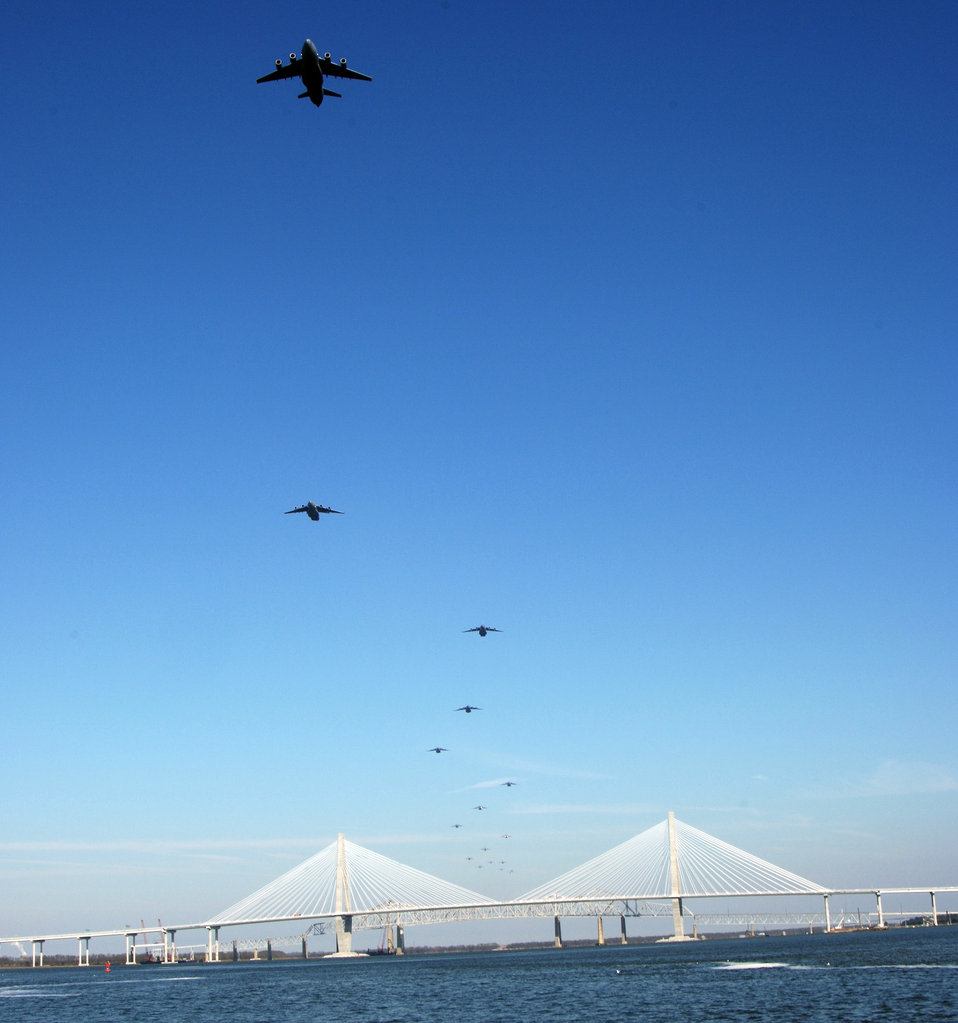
C-17 formation

CHARLESTON, S.C. (AFPN) -- A formation of 17 C-17 Globemaster IIIs assigned to the 437th and 315th Airlift Wings at Charleston Air Force Base fly in formation today. The flight, which demonstrates the U.S. Air Force's strategic capability, is the largest formation of C-17s to take flight from a single base.